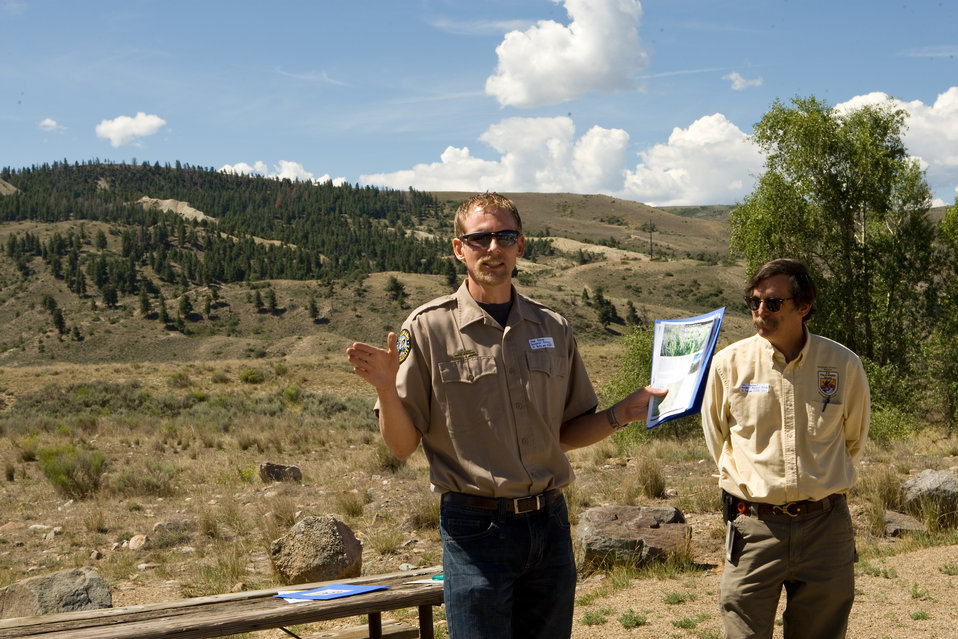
Colorado Rare Plant Conservation Initiative

The Colorado Rare Plant Conservation Initiative (RPCI) is a partnership of 23 statewide and regional agencies, private organizations, and academic institutions working to conserve 121 rare plants in Colorado. As part of these efforts the group developed the Colorado Rare Plant Conservation Strategy, developed Best Management Practices to reduce energy development impacts, addressed climate change, and developed focused strategies for the conservation of individual species at eight priority landscapes. The group has also worked to coordinate volunteer efforts for plant conservation across the state.